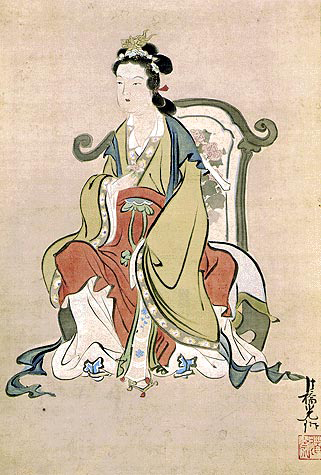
'Seiobo (Queen Mother of the West)' by Ogata Korin, c. 1705, Japan, Edo period (1615‚Äì1868), Hanging scroll; ink and color on silk over paper, Kimbell Art Museum